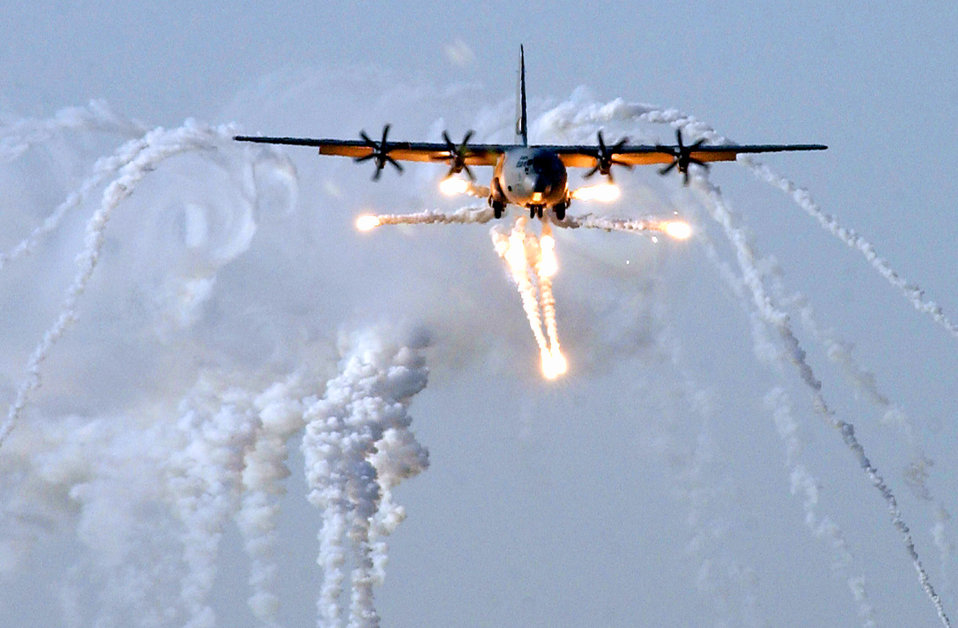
Air show

OPERATION IRAQI FREEDOM -- A British C-130J launches flare countermeasures prior to being the first coalition aircraft to land on the reopened military runway at Baghdad International Airport, July 1. The runway was bombed by coalition aircraft and has been closed since the beginning of the war. Repaired by the 1st Expeditionary Red Horse Group and the 447th Expeditionary Civil Engineer Squadron it is now operational.